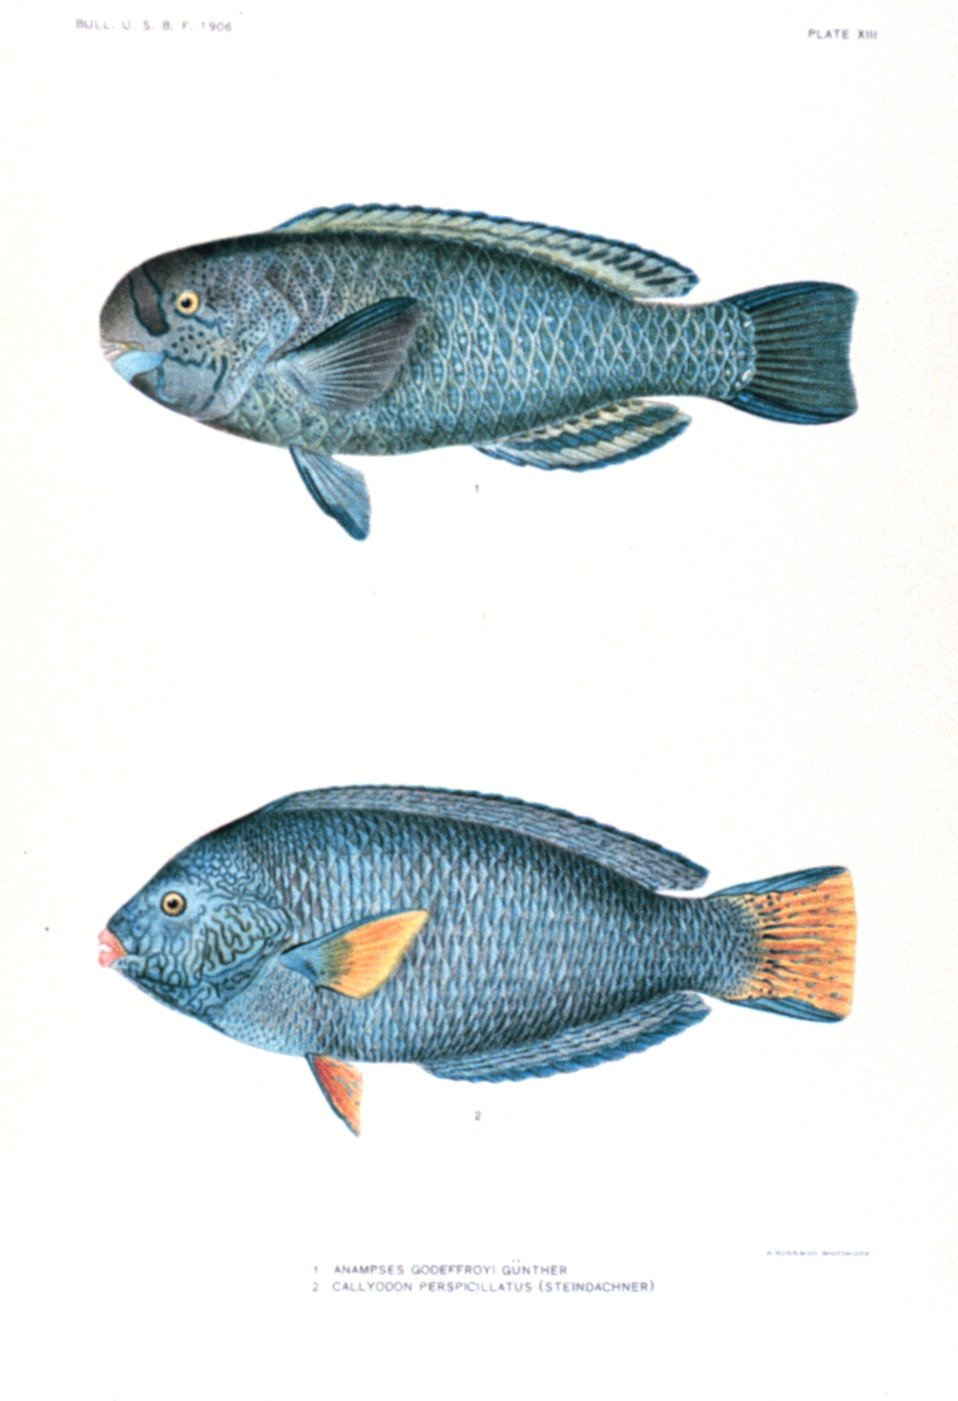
1 Anampses godeffroyi Gunther 2 Callyodon perspicillatus (Steindachner). In: 'Notes on Fishes of Hawaii, with Descriptions of New Species', by David Starr Jordan and John Otterbein Snyder. Bulletin of the Bulletin of the Bureau of Fisheries, Vol. XXVI, 1906. P. 218, Plate XIII.